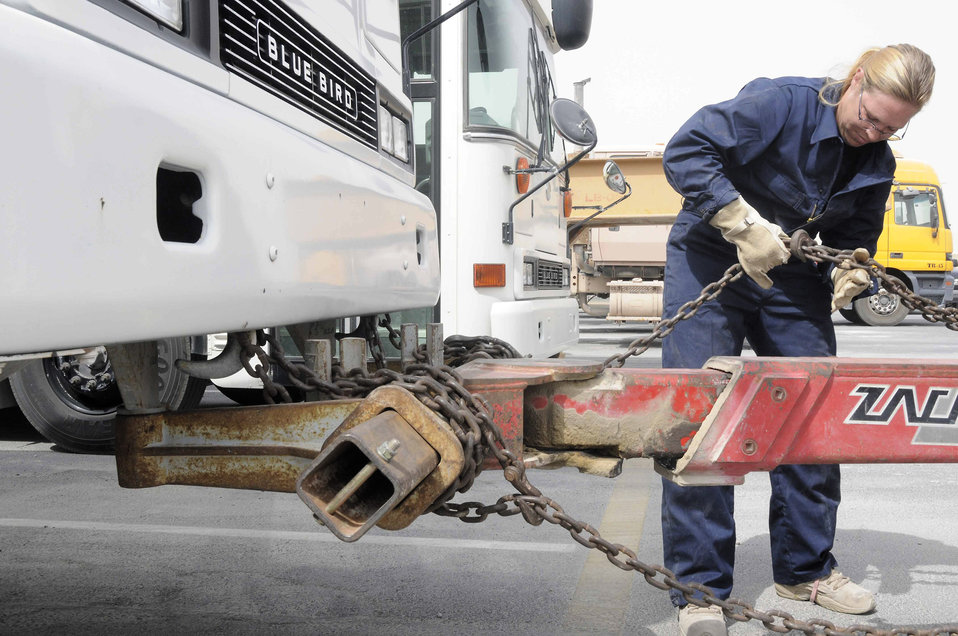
Airmen improve processes to increase efficiency

Gwen Crowder secures chains from a Zachlift to a bus July 22 at a Southwest Asian air base. Ms. Gwen is a 379th Expeditionary Logistics Readiness Squadron vehicle operator from Kileen, Texas.